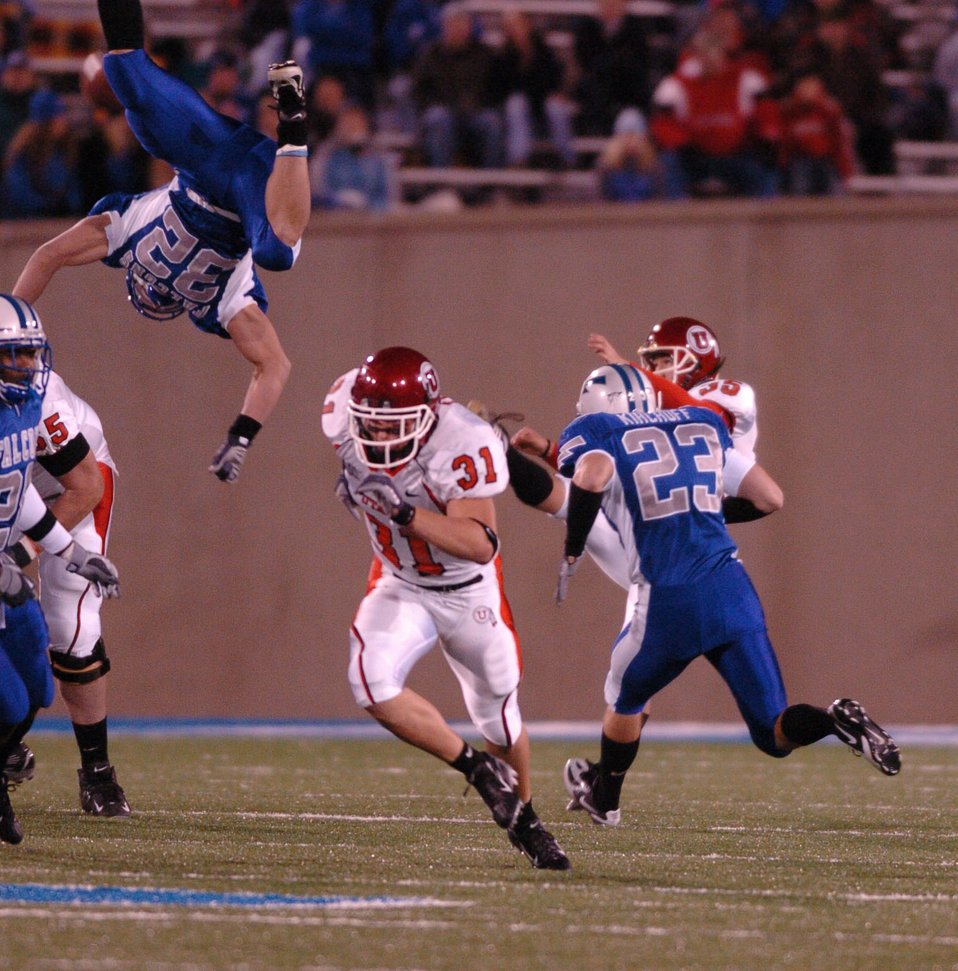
Special Teams

Air Force special teams player Hunter Altman gives new meaning to air power as he lofts himself over Utah defenders to attempt a punt block Nov. 18 in Colorado Springs, Colo. Ute punter Louie Sakoda averaged 45.2 yards per punt and also kicked the game winning field goal as time ran out for a 17-14 Utah win.